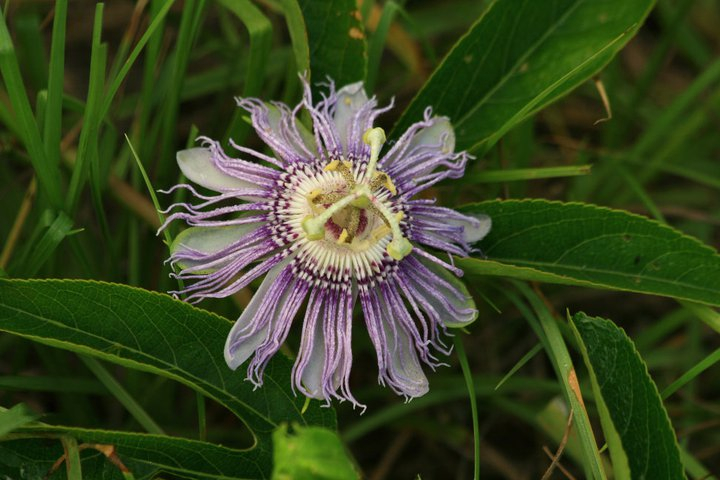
passionflower

St. Marks National Wildlife Refuge, FL